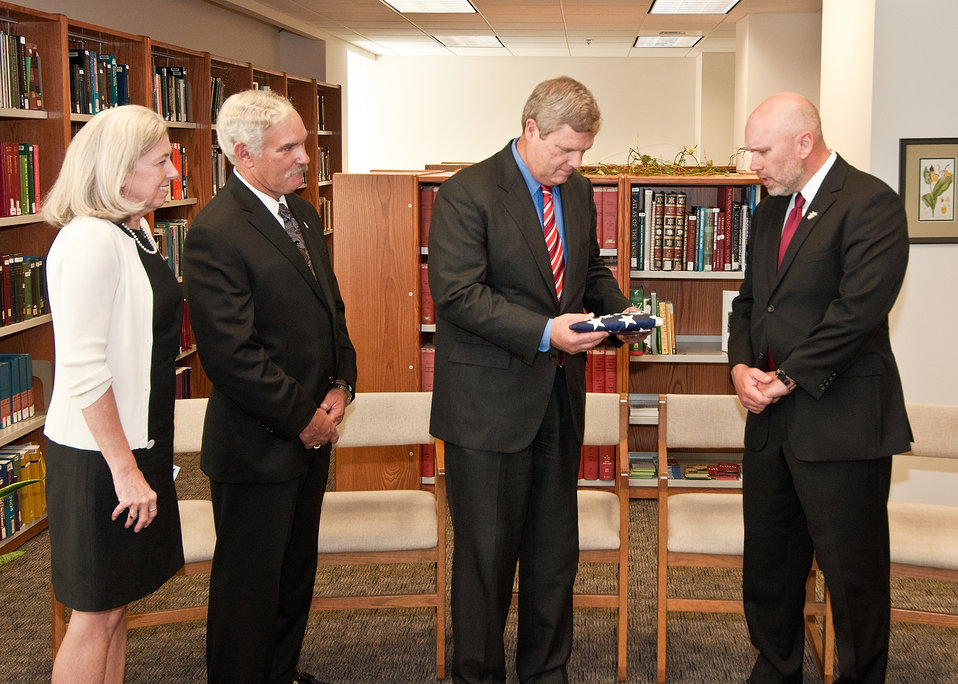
(L to R- Acting Administrator Foreign Agriculture Service Suzanne Heinen, Acting Undersecretary Farm and Foreign Agricultural Services Michael Scuse, Agriculture Secretary Tom Vilsack and Farm Services Agency and Farm Services Agency Senior Agriculture Advisor for the Provincial Reconstruction Team (PRT) in Taji North, Iraq Tim Lowery). Mr. Lowery presents Secretary Vilsack with the American flag flown over the Forward Operating Base Camp Taji, Iraq on Sept. 11, 2009 and on Sept. 11, 2010. The presentation took place at the U. S. Department of Agriculture in Washington, D. C. on Monday, Sept. 12, 2011.